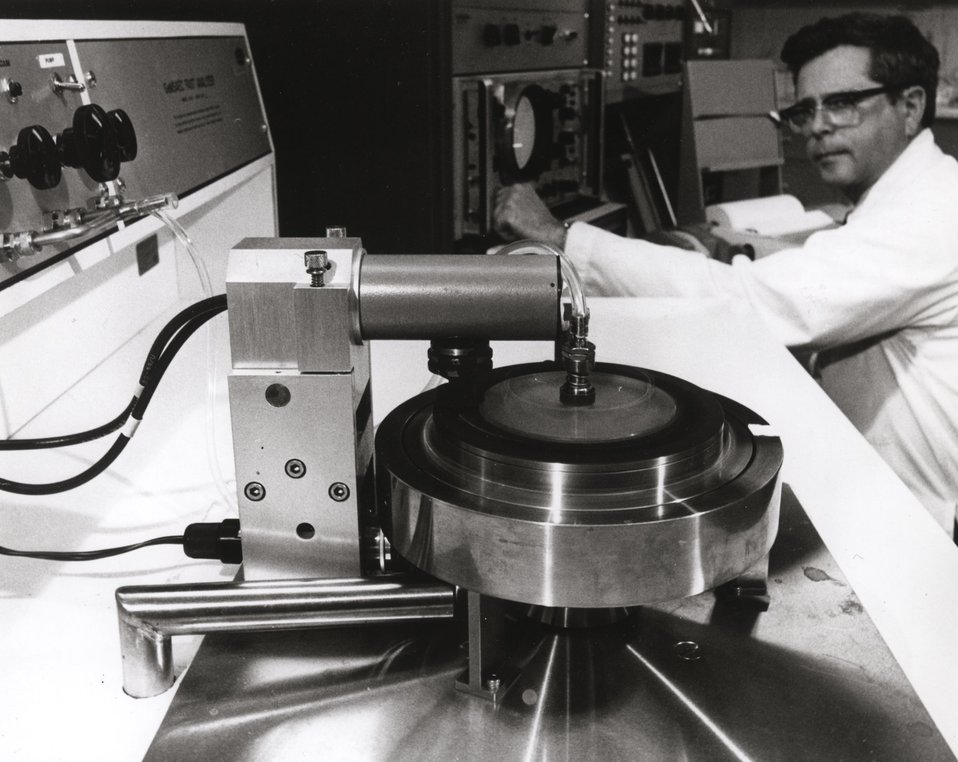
High-speed clinical analysis of body fluids is now possible using a centrifugal system called the GeMSAEC developed at the AEC's oak Ridge National Laboratory (ORNL), Oak Ridge, Tenn. c. 1972